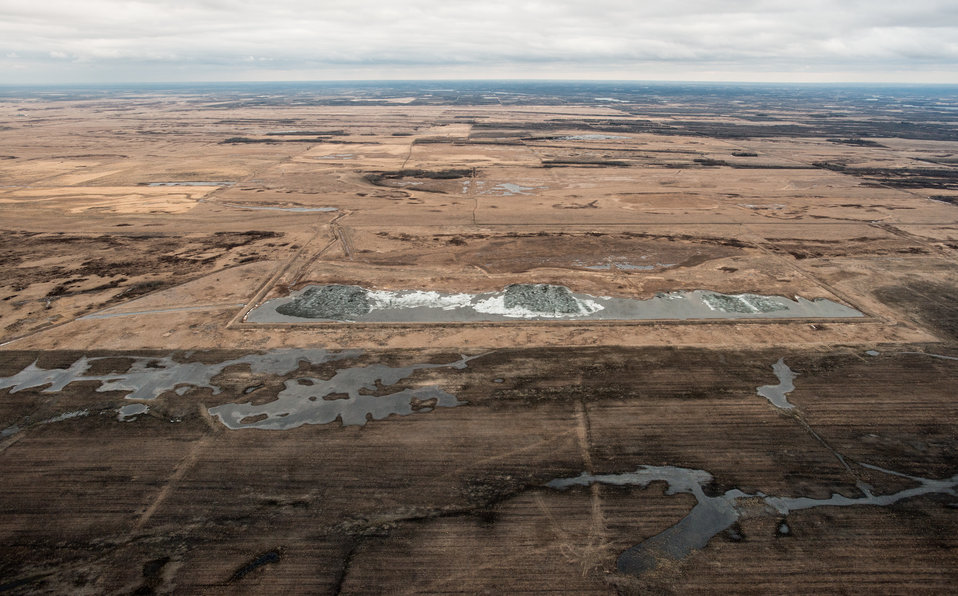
Burnham Creek Dam adjacent to the Department of the Interior (DOI) Glacial Ridge National Wildlife Refuge with U.S. Department of Agriculture (USDA) Wetland Reserve Program and Public Law PL83-566 Small Watershed Program participants’ land in Polk County, MN, on Tuesday, April 30, 2013. USDA Photo by Lance Cheung.

For information please see:

USDA Red River Basin Initiative (RRBI) www.mn.nrcs.usda.gov/news/features13/RRBI.html
Wetlands Reserve Program www.nrcs.usda.gov/wps/portal/nrcs/main/national/programs/...
Public Law PL83-566 (PL-566) Small Watershed Program www.nrcs.usda.gov/wps/portal/nrcs/detail/nd/technical/?ci...